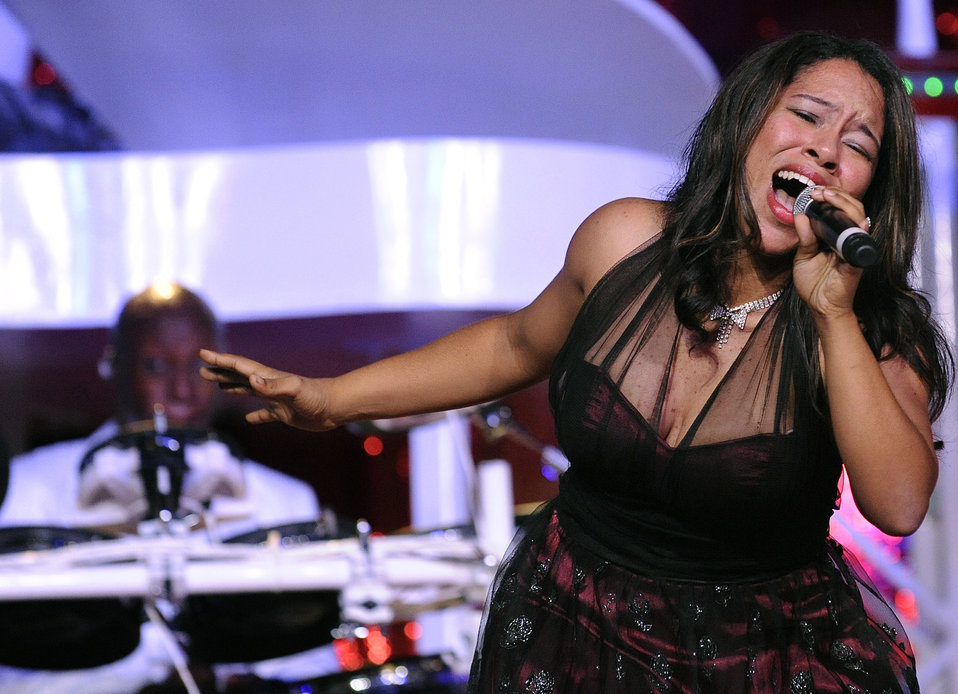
Air Force Week-Sacramento

Tops In Blue Entertainer, Airman First Class Joanell Jackson, sings the Effie White classic